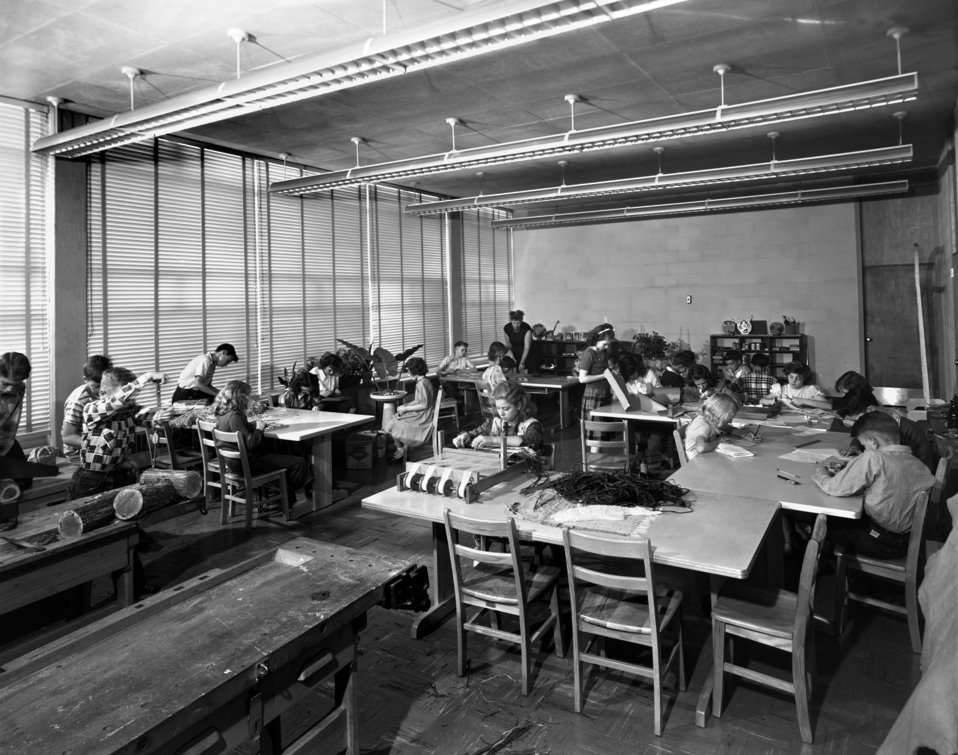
Willow Brook School Oak Ridge 1949

5763-6 DOE photo Ed Westcott 11-29-1949 Oak Ridge Tennessee